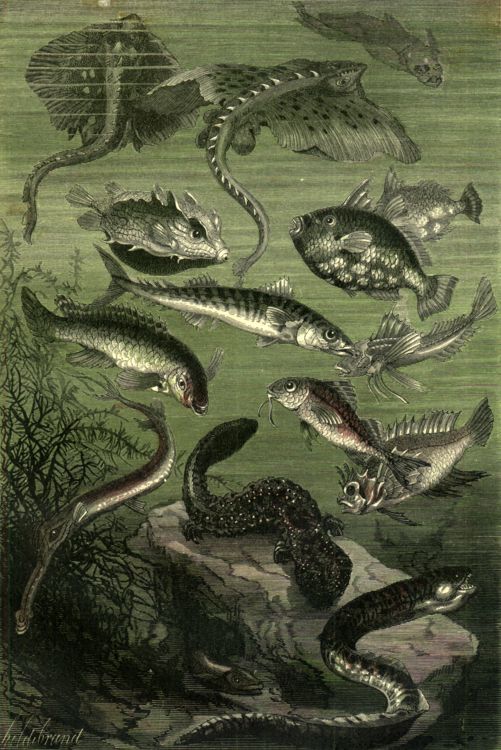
An illustration from Jules Verne's novel 'Twenty Thousand Leagues Under the Sea' (1866-69) drawn by George Roux. Polski: Ilustracja powieści Juliusza Verne'a 'Dwadzieścia tysięcy mil podmorskiej żeglugi' (tytuł przekładany także jako: 'Dwadzieścia tysięcy mil podmorskiej żeglugi około świata', '20.000 mil podmorskiej żeglugi'; 1866-69, I wyd. 1870) autorstwa Alphonse'a de Neuville lub Édouarda Riou. Français : Jules Verne 'Vingt mille lieues sous les mers' (1866-69), dessins par Alphonse de Neuville ou Édouard Riou. Orginal description taken from the book: